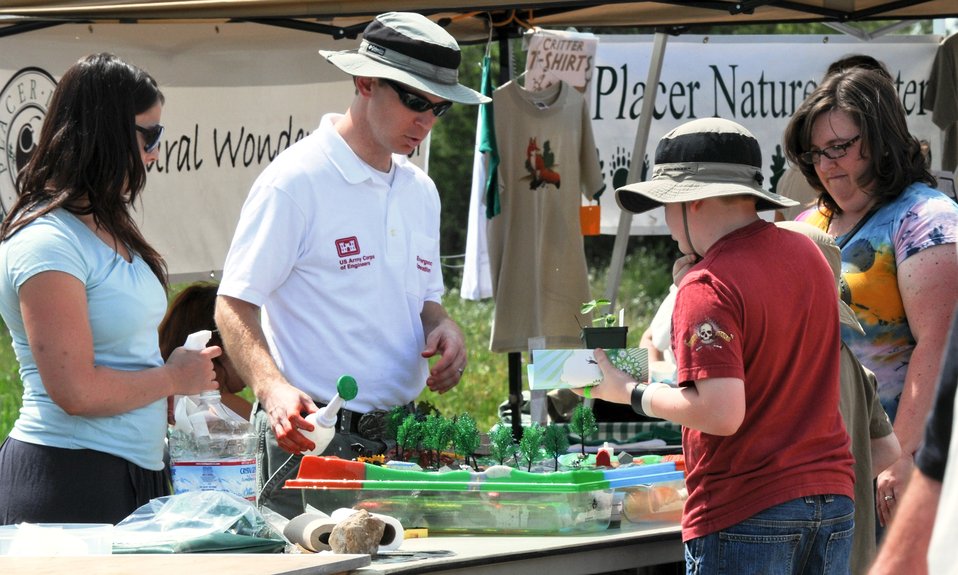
Sacramento District regulators talk wetlands

ROSEVILLE, Calif. (April 18, 2011) -- U.S. Army Corps of Engineers Sacramento District regulatory project managers (from left) Krystel Bell and Zach Simmons use a watershed model to show how wetlands clean and filter water during the fourth annual Celebrate the Earth Festival at Mahany Park here April 16.

Bell and Simmons continued the demonstrations started by fellow Corps employees Judy Soutiere and Chandra Jenkins, who explained the Corps' involvement in aquatic ecosystem restoration and watershed planning earlier in the day.
“We’re here to educate the public on what the Army Corps regulatory department does and how important wetlands are to the environment,” Bell said.